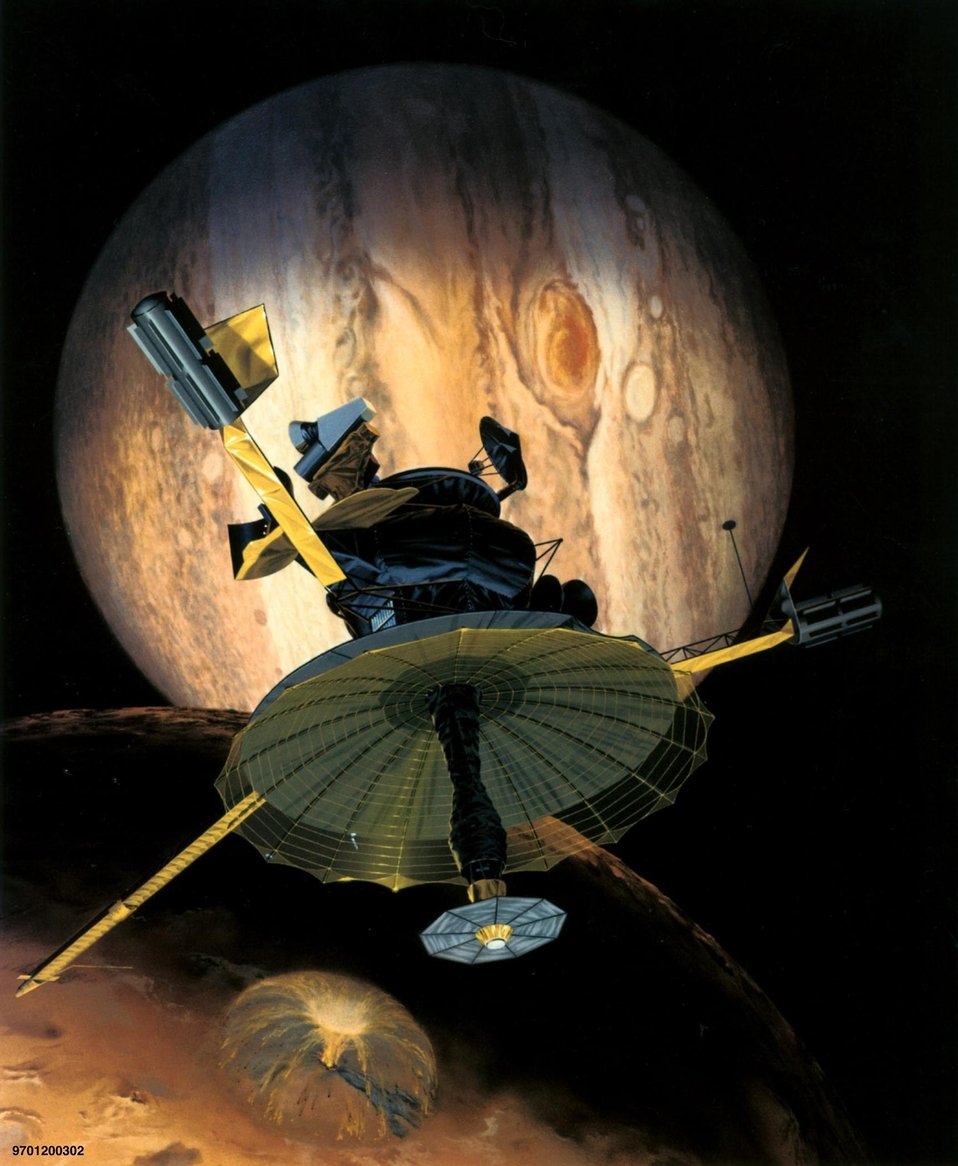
SANDIA NATIONAL LABORATORIES DEVELOPED THE PARACHUTE AIR BAGS FOR THE MARS PATHFINDER TO LAND ON MARS.